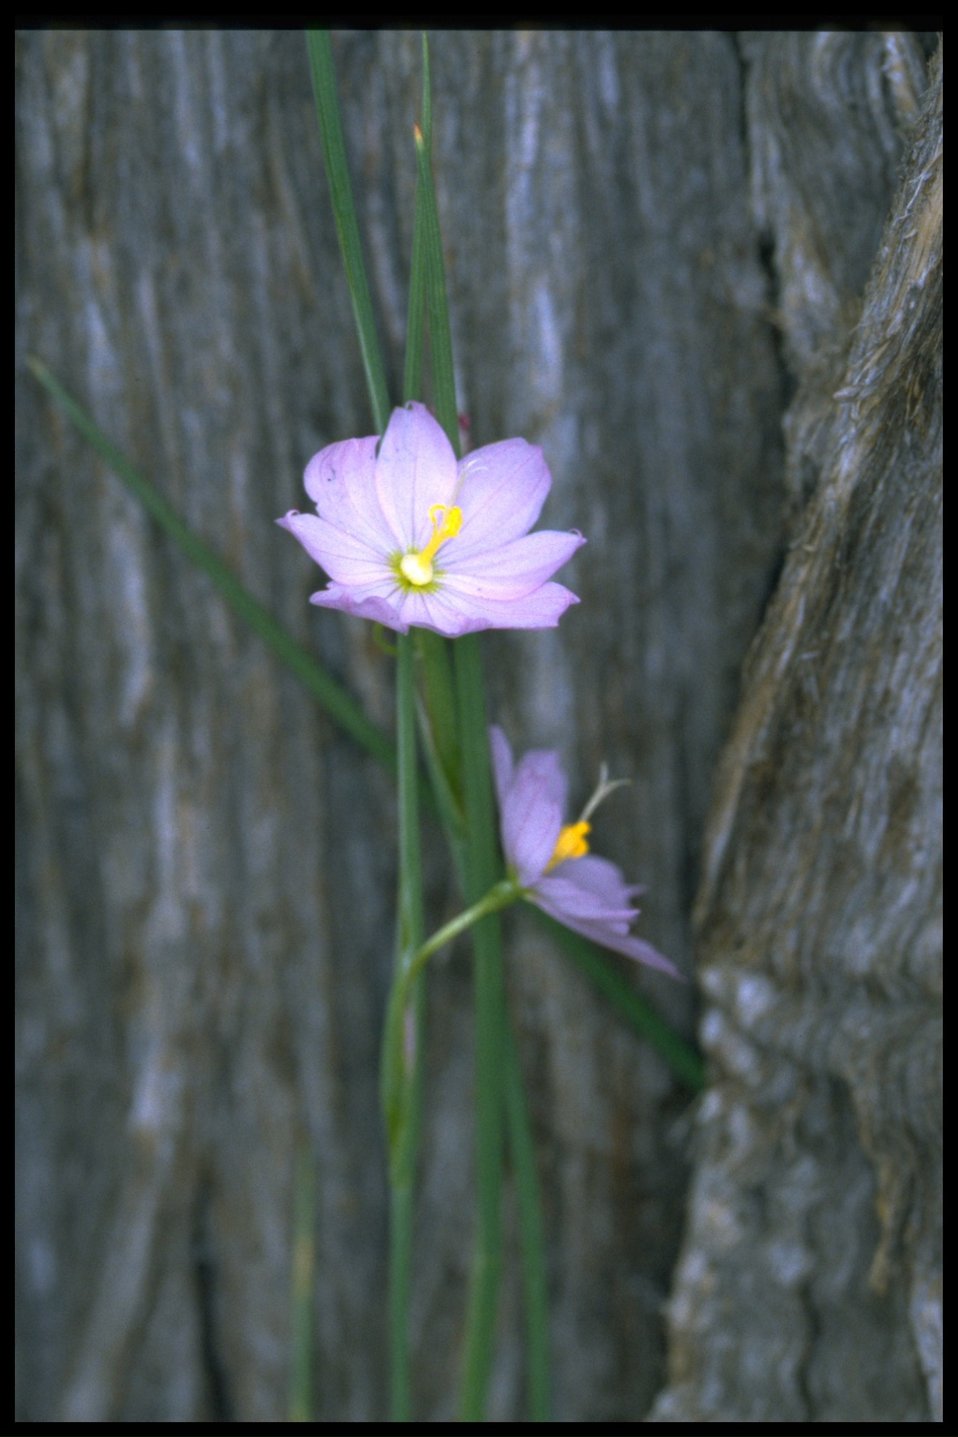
Medium shot of inflated grasswidow (Olsynium douglasii var. inflatum).